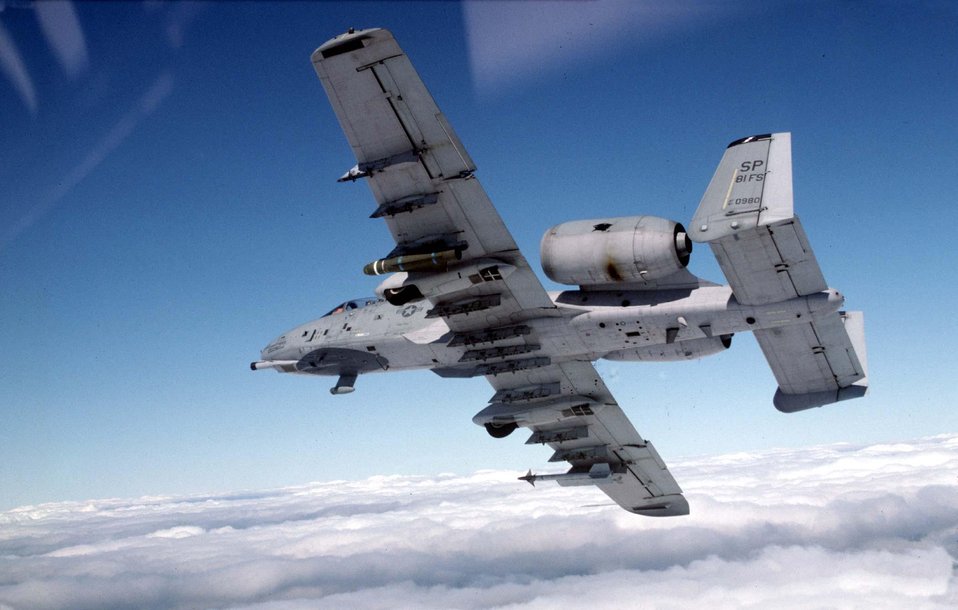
Thunderbolt in flight

1990's -- An A-10 Thunderbolt II from the 52nd Fighter Wing, Spangdahlem Air Base, Germany, flies over southern Germany. A-10s are the first Air Force aircraft specially designed for close air support of ground forces. They are simple, effective and survivable twin-engine jet aircraft that can be used against all ground targets, including tanks and other armored vehicles. The A-10 has excellent maneuverability at low air speeds and altitude, and are highly accurate weapons-delivery platforms. Their wide combat radius and short takeoff and landing capability permit operations in and out of locations near front lines.